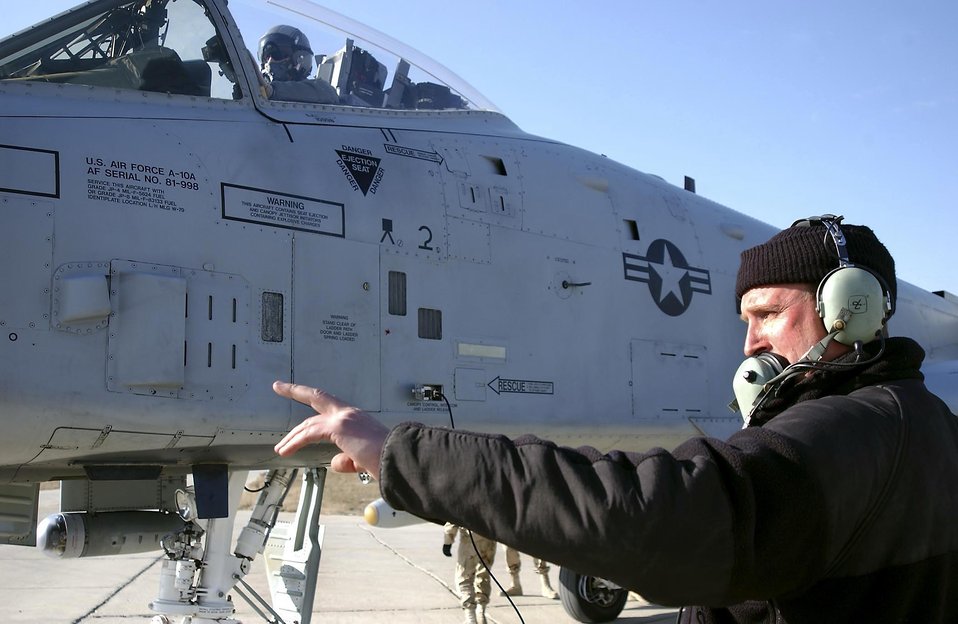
Runway's end home for 'Warthog' launchers

BAGRAM AIR BASE, Afghanistan -- Tech. Sgt. Mike Milewski, a crew chief, talks to the pilot of an A-10 Thunderbolt II ground attack jet here during an end-of-runway check. Milewski is with the Maryland Air National Guard’s 104th Fighter Squadron’s end-of-runway crew, which is doing a 30-day tour at the base as part of the 455th Expeditionary Operations Squadron. The crew gives each ground-attack fighter a thorough going over before it departs on a mission.